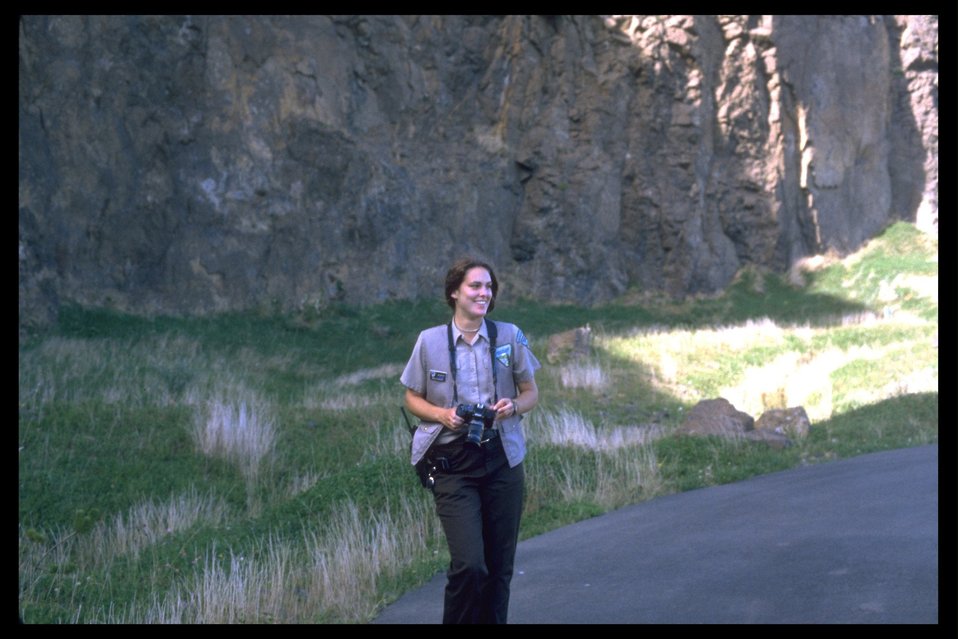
BLM intern, Jill Young, holding a camera.